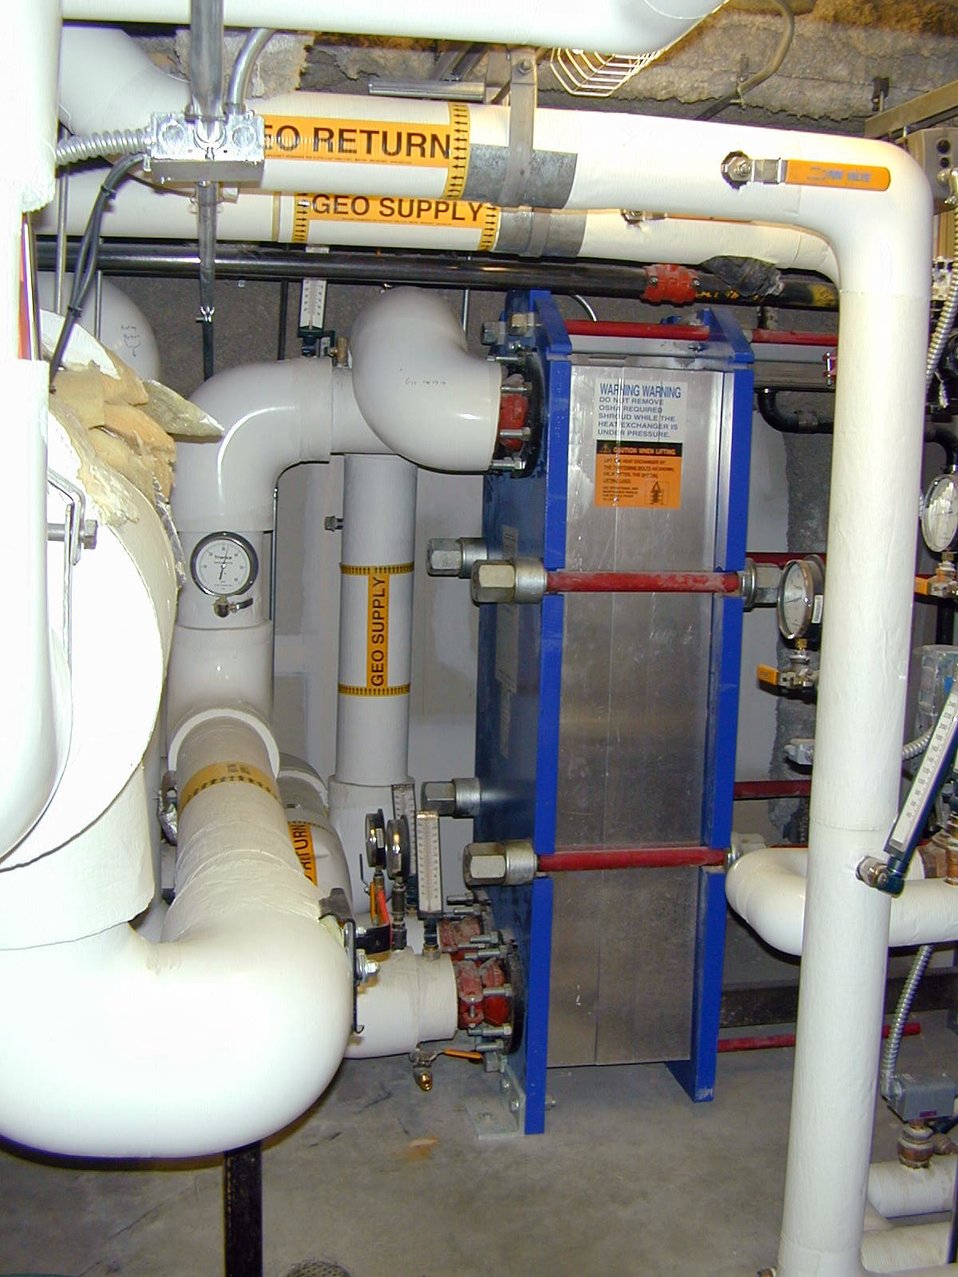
Plate-type heat exchanger connected to geothermal heating system and used for pool heating at the Elks Rehabilitation Hospital, Boise, ID.
This building is connected to the City's Geothermal District Heating System, one of the largest in the world.